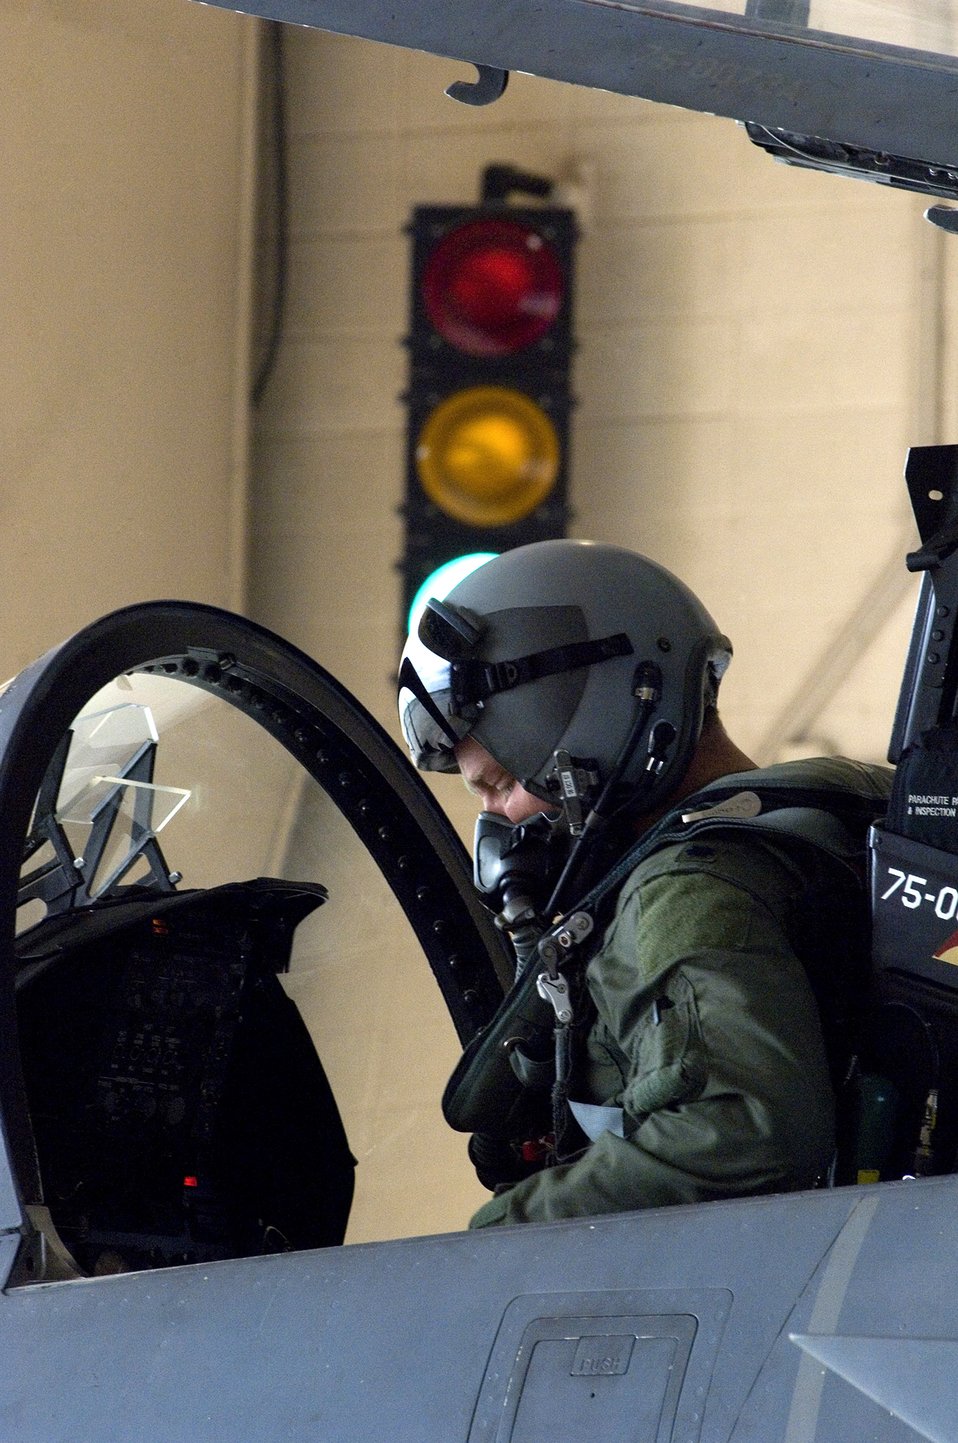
Guard unit helps protect nation

Lt. Col. Michael Birkeland has the green light for take-off during a training exercise for Operation Noble Eagle Oct. 3 at Homestead Air Reserve Base, Fla. The 125th FW, Det. 1, maintains F-15 Eagle fighters on continuous 24-hour alert status, ready to intercept unknown aircraft at any time for Operation Noble Eagle. Colonel Birkeland is the 125th Fighter Wing, Det. 1 commander.